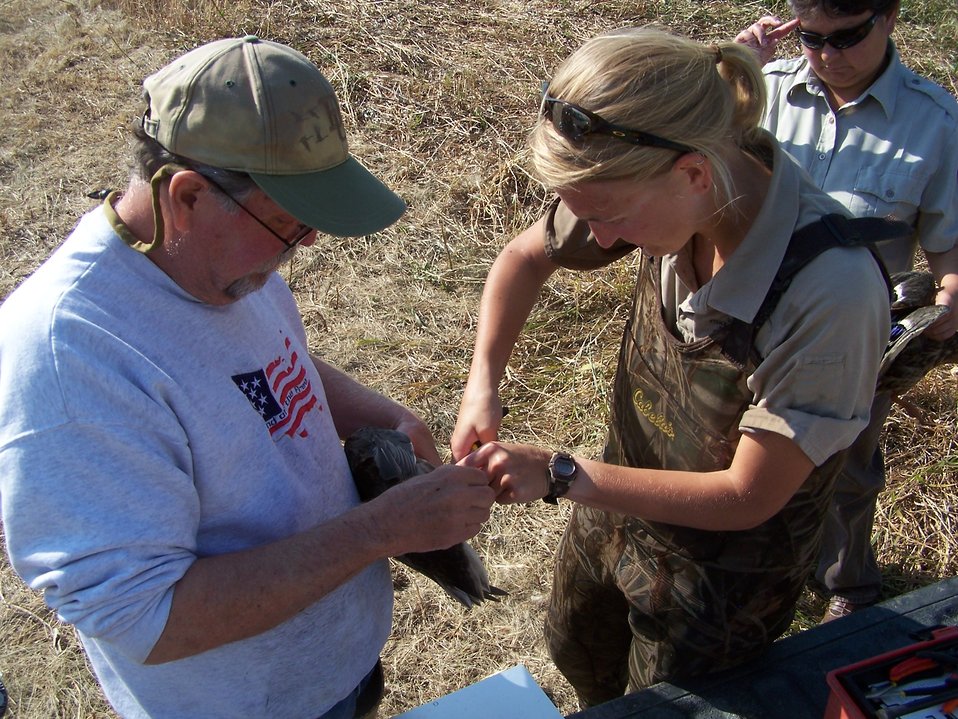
Waterfowl Banding

Banding waterfowl on Bowdoin NWR